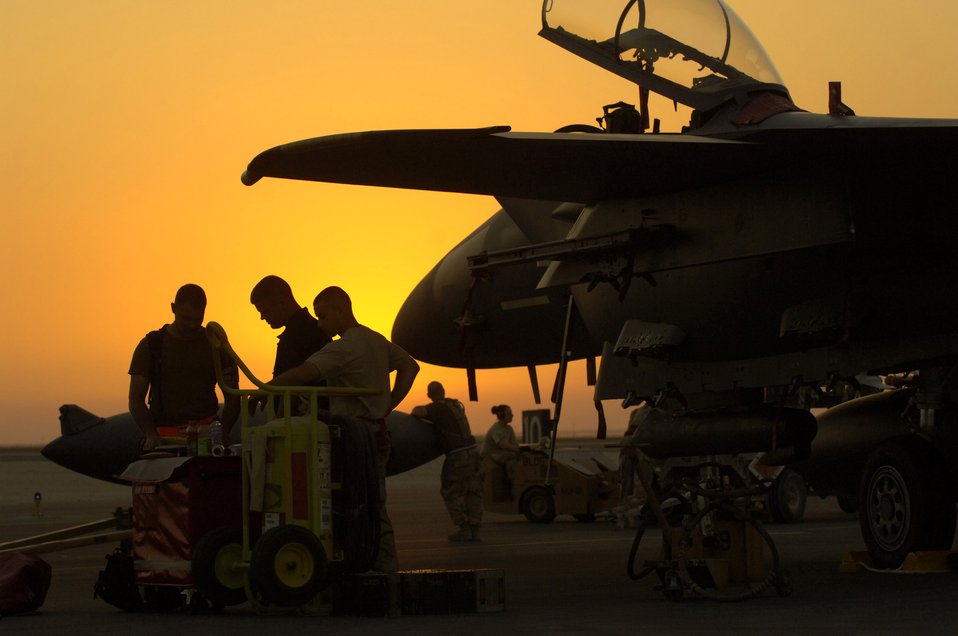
CENTAF airpower summary for March 15

Staff Sgt. Sean Tracey, Senior Airman Sean Timothy and Airman 1st Class Henry Rodriguez perform a post-flight inspection on an F-15E Strike Eagle at a forward-deployed base in Southwest Asia. The crew chiefs are assigned to the 494th Aircraft Maintenance Unit.